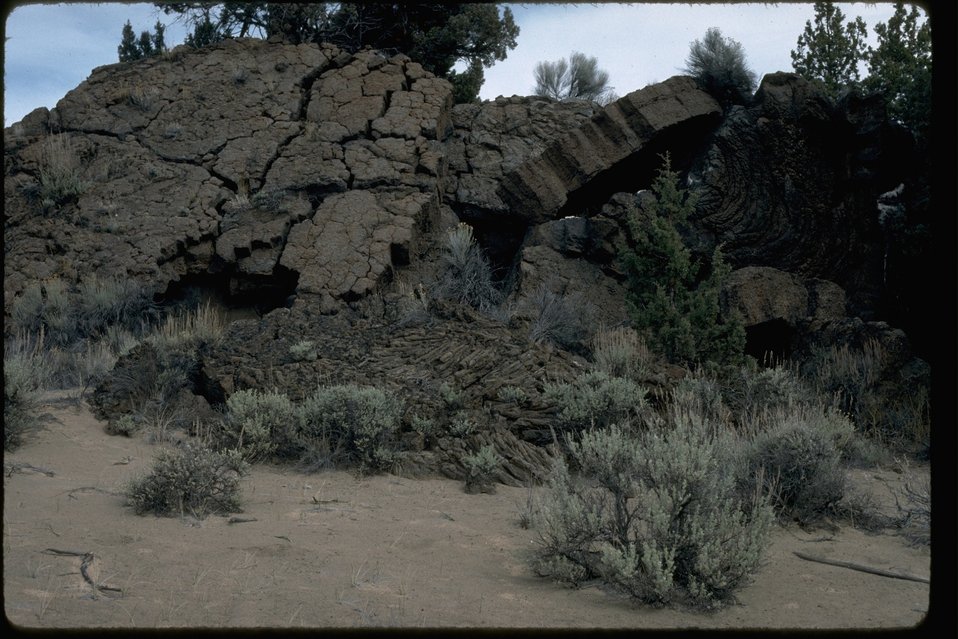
The lava beds in the Badlands Wilderness Study Area. OR 5-21